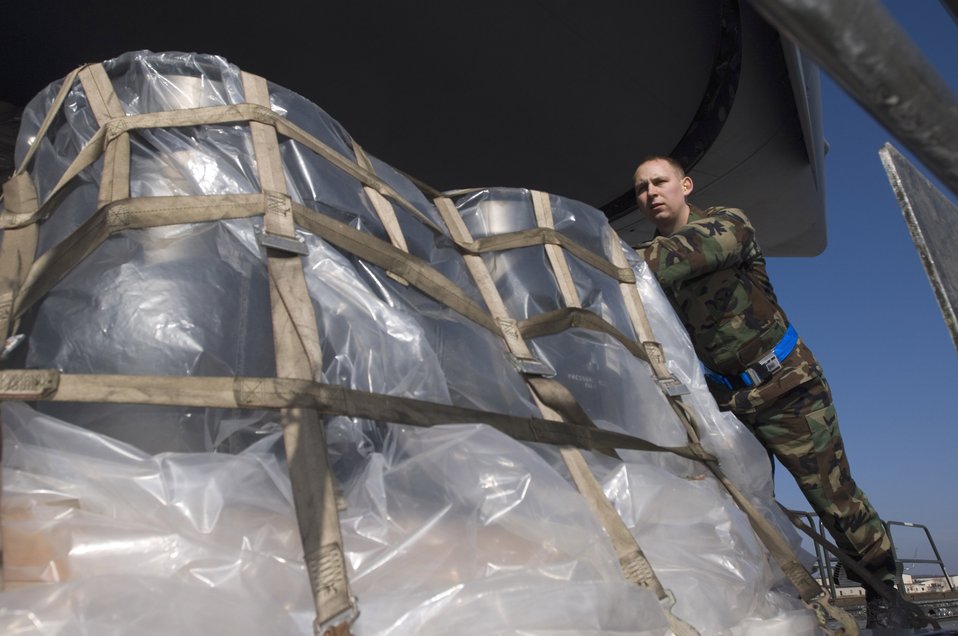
C-17 surpasses its 1 millionth flying hour

Staff Sgt. Brian Derry pushes a pallet onto a C-17 Globemaster III at Ramstein Air Base, Germany, on Sunday, March 19, 2006. The Mississippi Air National Guard transport was due to fly to Al Asad and Balad Air Base, Iraq, as part of a mission that would put the air transport past the 1 millionth hour of flight time. Sergeant Derry is an air transportation specialist with Ramstein's 723rd Air Mobility Squadron.